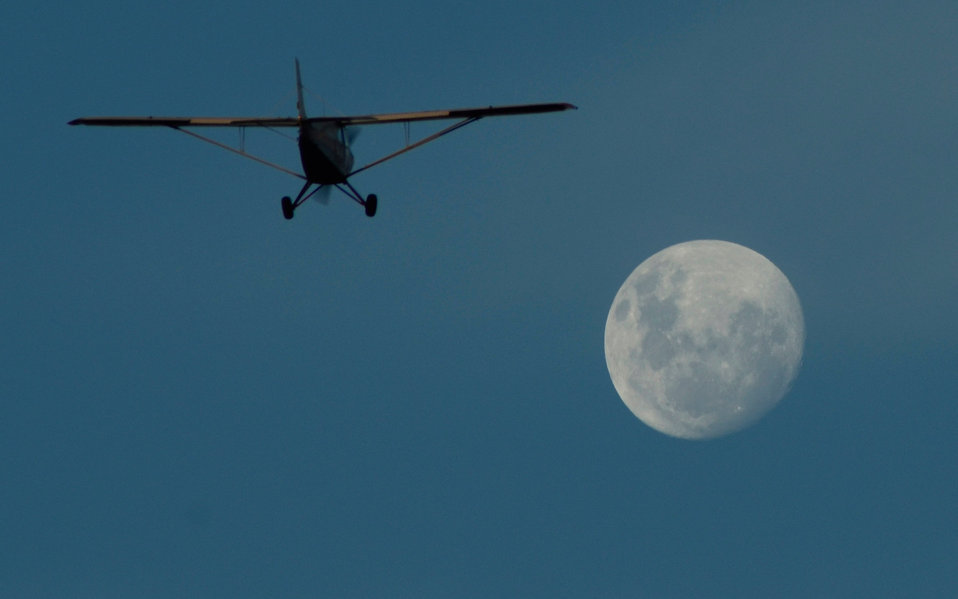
Airplane and moon.